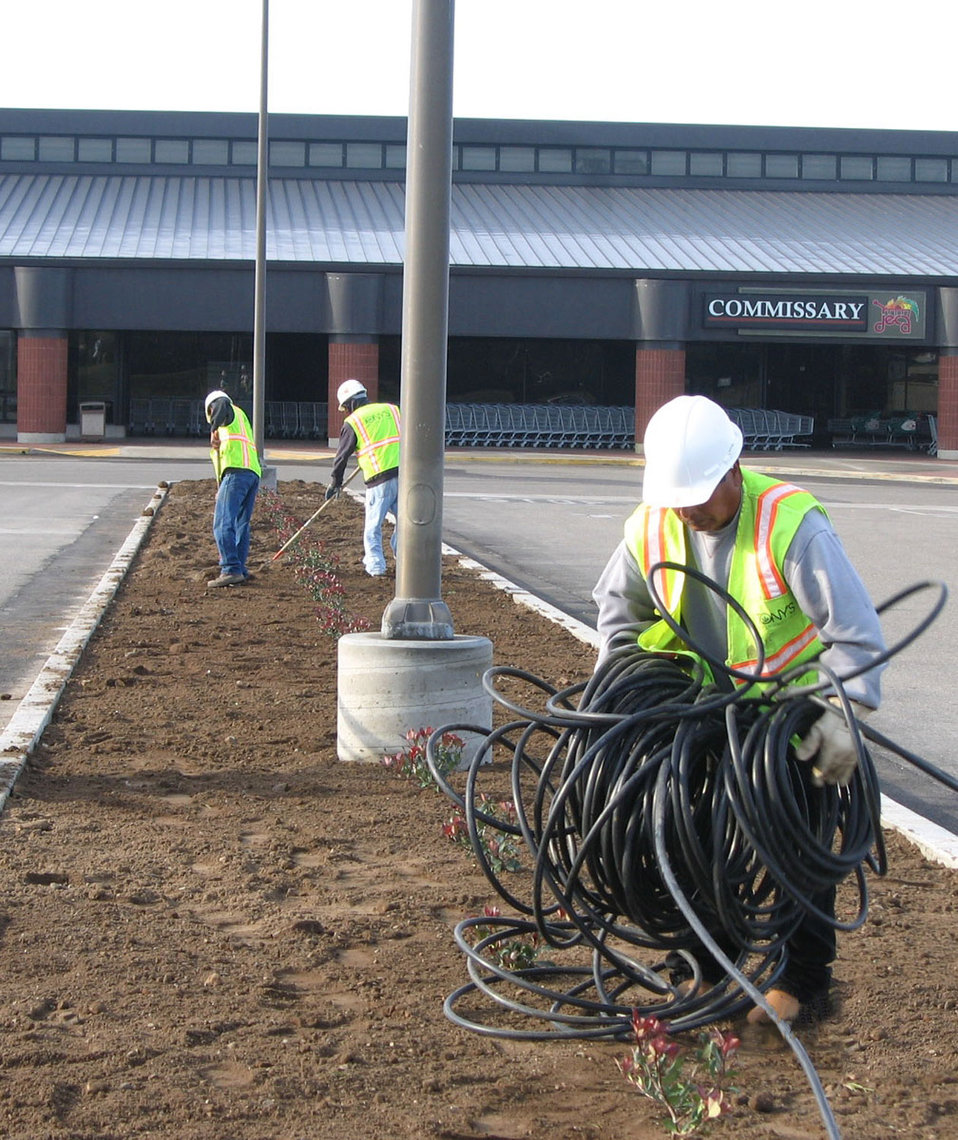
AFCEE, AAFES join forces to construct new facilities

Government contractors install a drip line, otherwise known as a soaker hose, in the median before the grass sod is laid down. This is one of the final steps before the Army and Air Force Exchange Service fuel station is opened in January at Vandenberg Air Force Base, Calif.